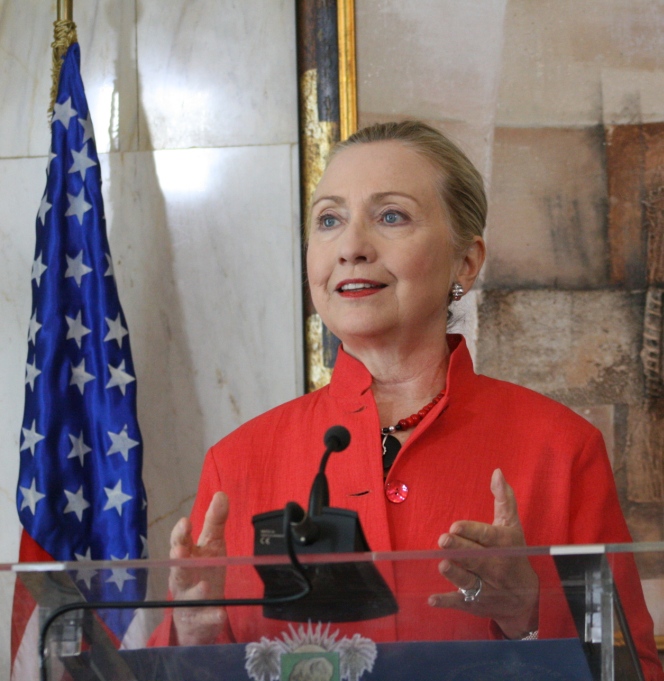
Secretary Clinton Responds to a Question

U.S. Secretary of State Hillary Rodham Clinton responds to a question from a reporter during her joint press conference with Ivoirian President Alassane Ouattara at the Presidential Palace in Abidjan, Cote d’Ivoire, on January 17, 2012.